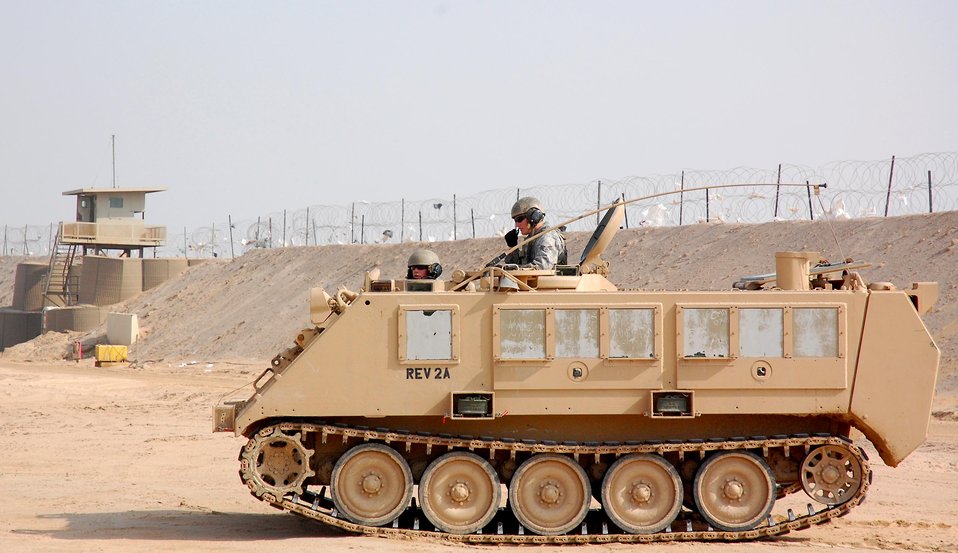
Airmen perform unique missions in Iraq

Senior Airman Travis Hummel (standing) and Airman 1st Class Adam Giebitz patrol Feb. 10 in an M-113 Armored Personnel Carrier at the Theater Internment Facility at Camp Bucca, Iraq. Airmen Hummel and Giebitz are deployed from Robins Air Force Base, Ga., and are assigned to the 886th Expeditionary Security Forces Squadron's quick response force. The QRF responds to issues within the TIF in which a show of force or escalation of force is required beyond the capabilities for the TIF's guard force.